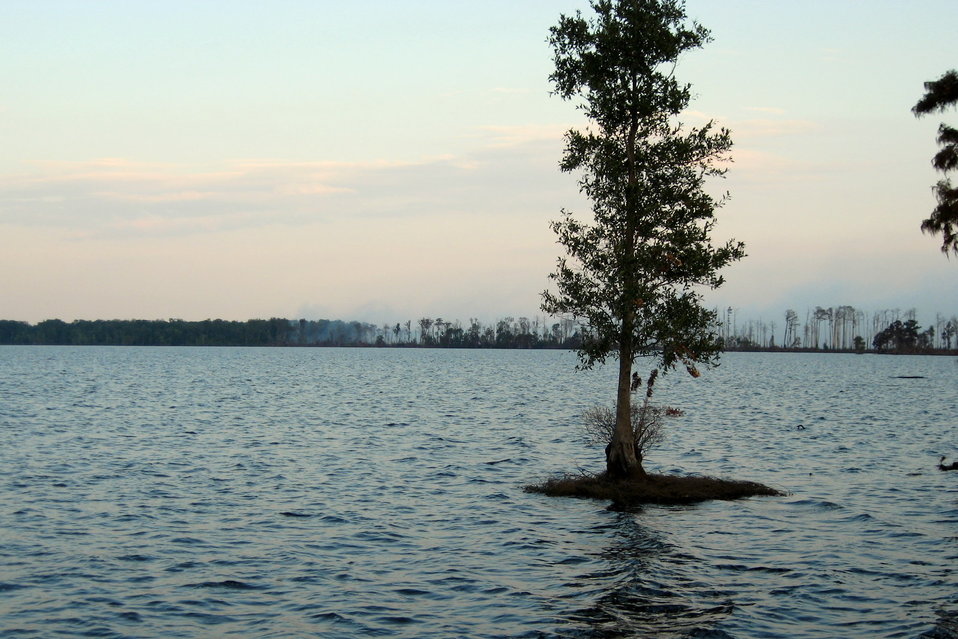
Smoke on Lake Drummond horizon

Suffolk, VA, August 2011: Smoke looms close to the horizon (right) over Lake Drummon on Great Dismal Swamp National Wildlife Refuge. The Lateral West Fire burned over 6,300 acres in the refuge and adjoining Dismal Swamp State Park..